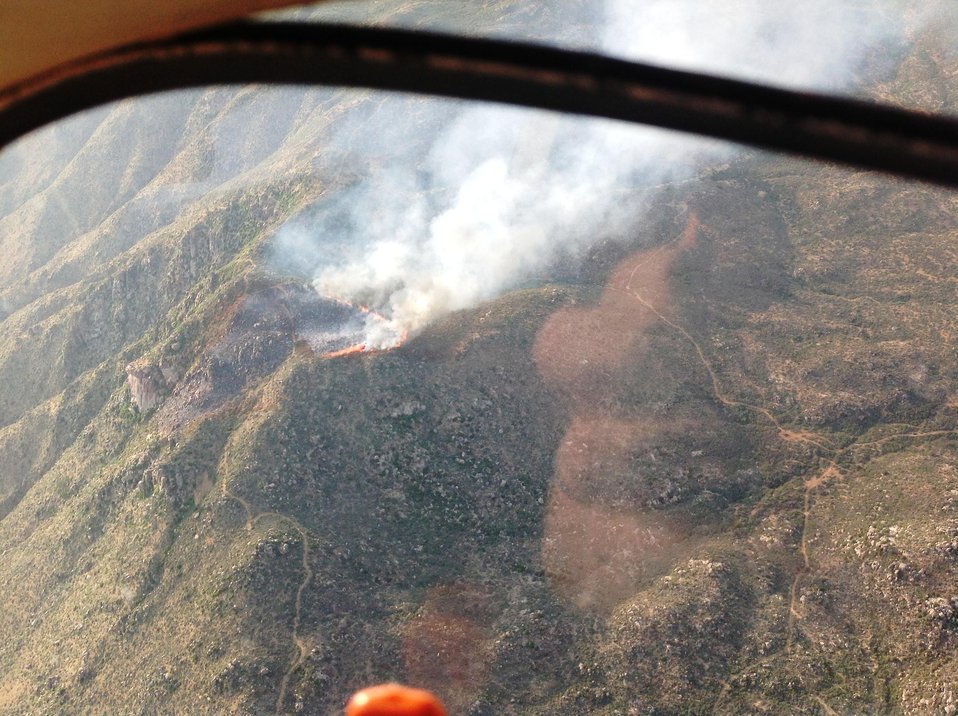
The Yarnell Fire began on Jun. 28, 2013 from a lightning strike and is approximately 1.5 miles from Yarnell, AZ.